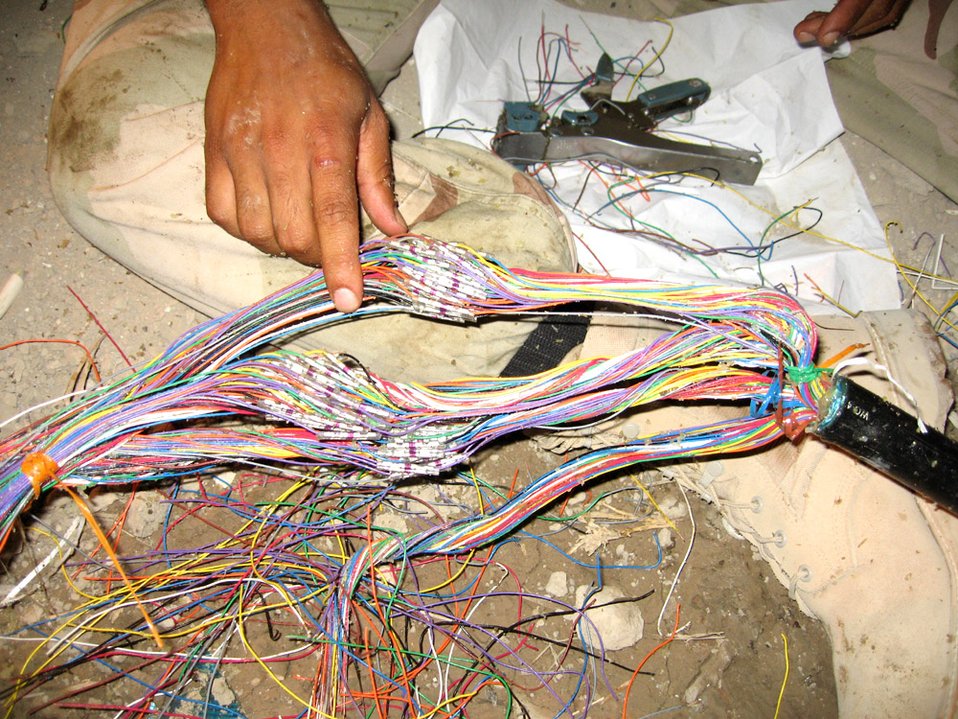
Dawgs get dirty, put PERSCO back online

ALI BASE, Iraq -- Airmen with the 407th Expeditionary Communications Squadron had to match and connect 200 copper wires and six fiber cables to get the 407th Personnel Support fro Contingency Operations section's communications back online.